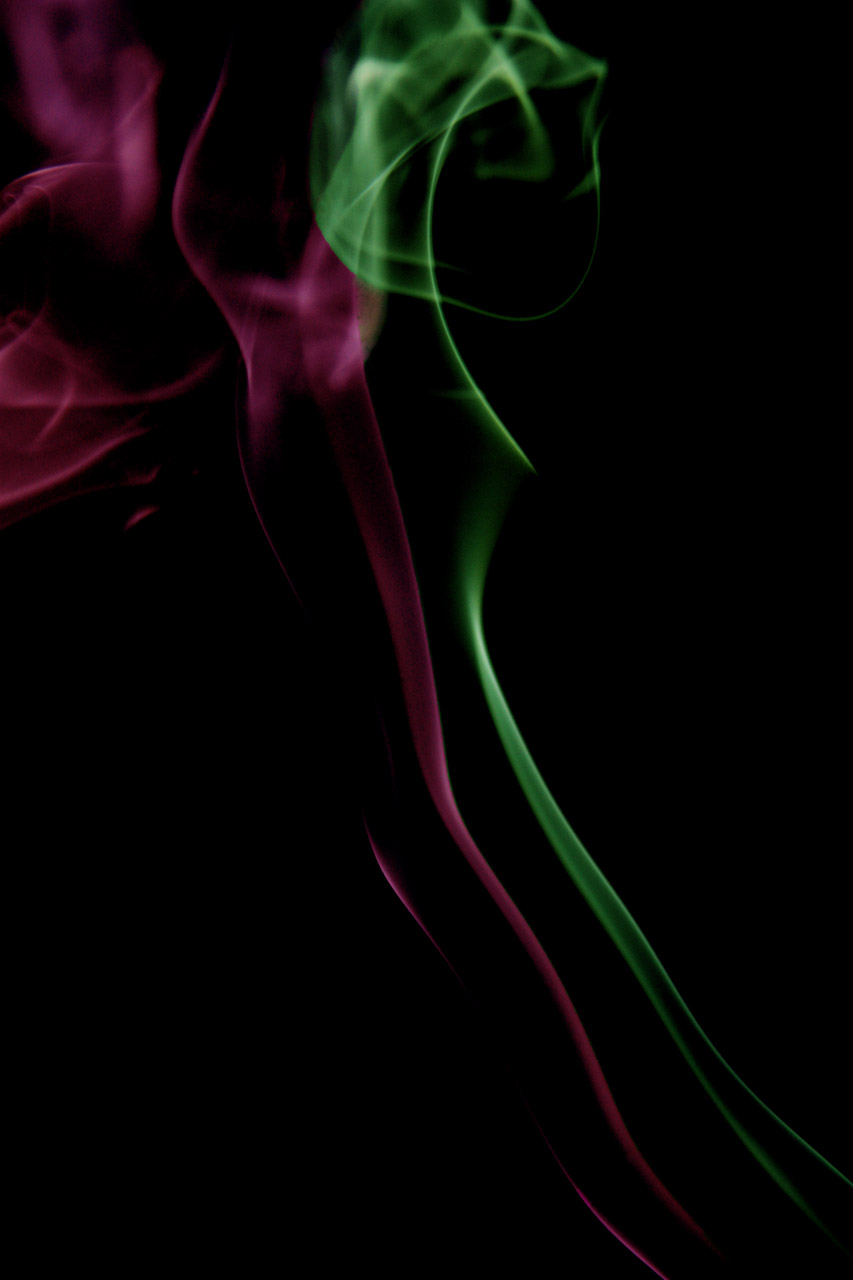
Smoke

Colorful smoke.